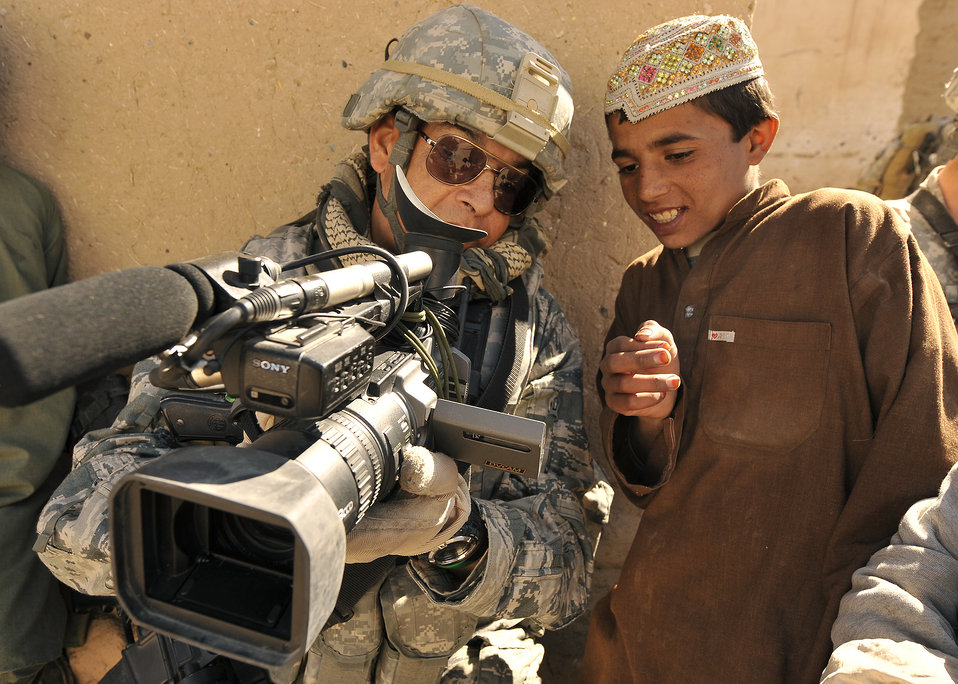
Behind the lens: Combat camera in Afghanistan

Master Sgt. Robert Carreon shows an Afghan student his footage Jan. 7, 2010, at the Bazaar school in Hutal, Afghanistan. Sergeant Carreon is a videographer with 4th Combat Camera and was attached to the 5th Brigade, 2nd Infantry Division.